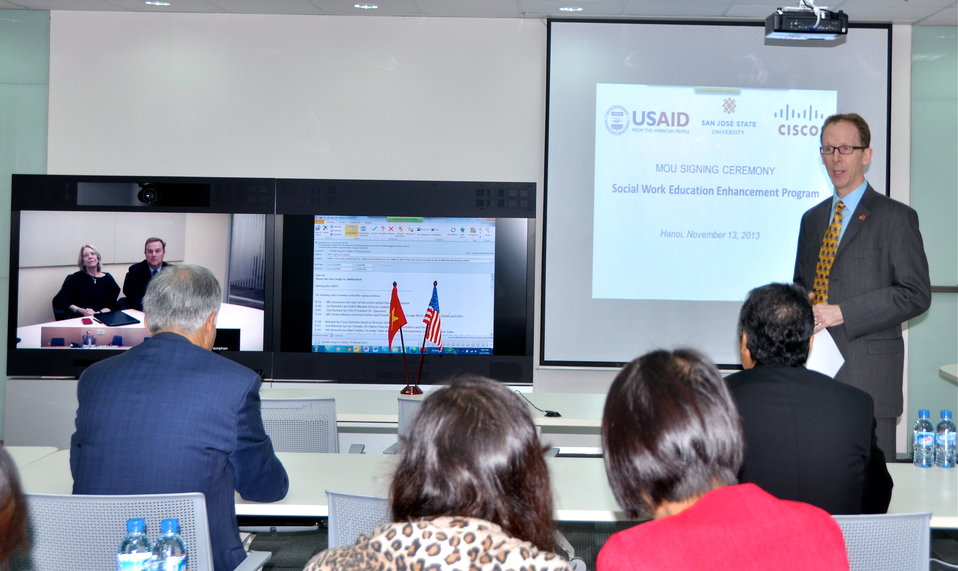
USAID Mission Director Joakim Parker speaks at the MOU signing ceremony.

Hanoi, November 13, 2013.